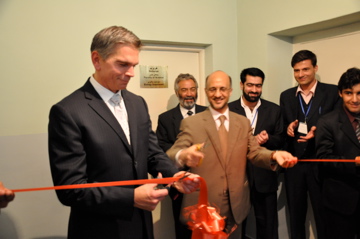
Kabul University Opens Newly Re-established Herbarium to help protect Afghanistan's Botanical Heritage